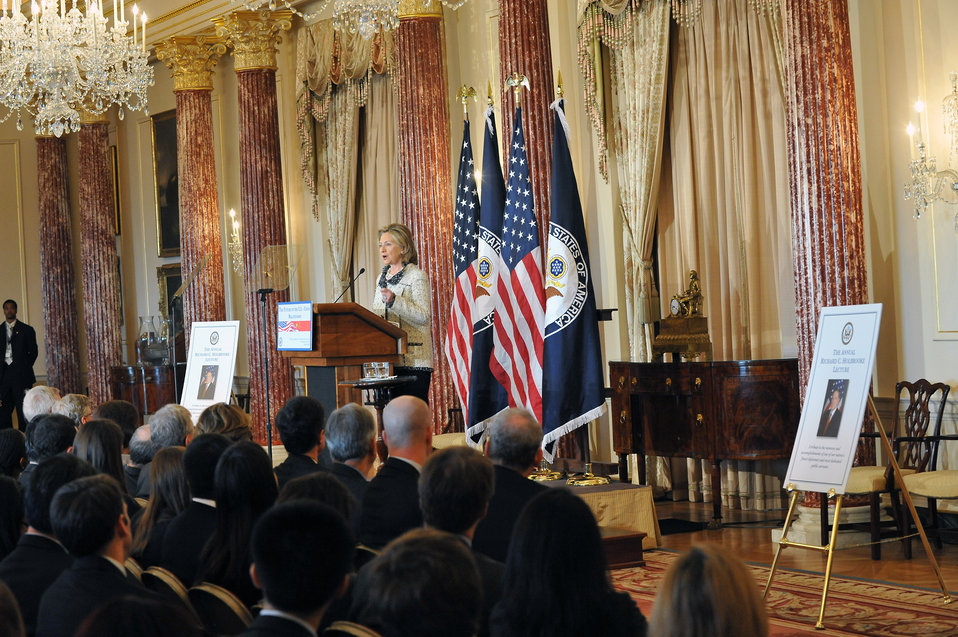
Secretary Clinton Delivers Remarks for the Inaugural Richard C. Holbrooke Lecture

U.S. Secretary of State Hillary Rodham Clinton delivers remarks for the Inaugural Richard C. Holbrooke Lecture: Broad Vision of U.S.- China Relations in the 21st Century, in the Benjamin Franklin Room in the U.S. Department of State in Washington, D.C., on January 14, 2011.